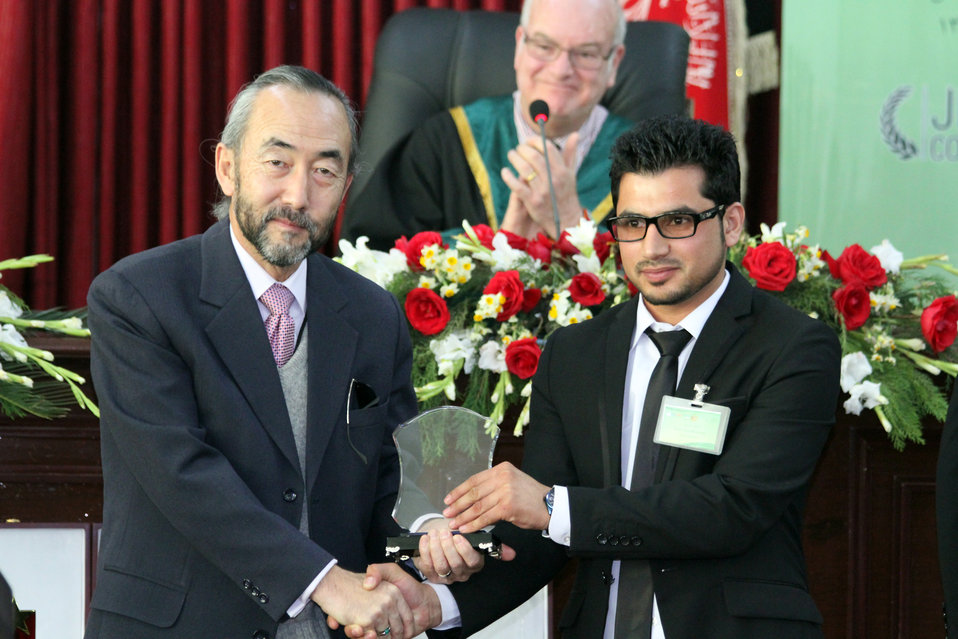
Afghanistan Final National Round of the 2013 Philip C.Jessup International Law Moot Court Competition